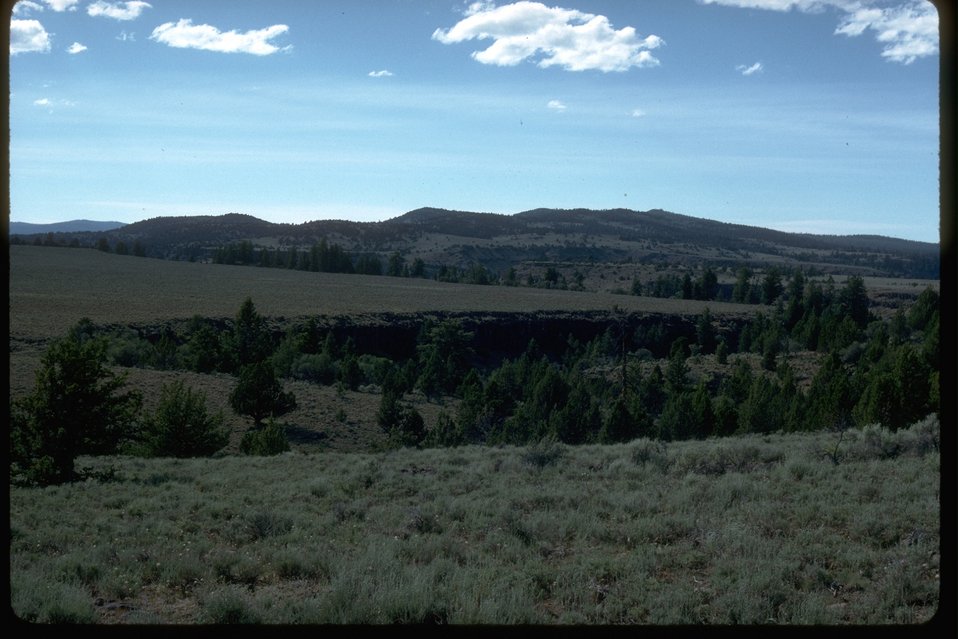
Low sage plateau in central Oregon.